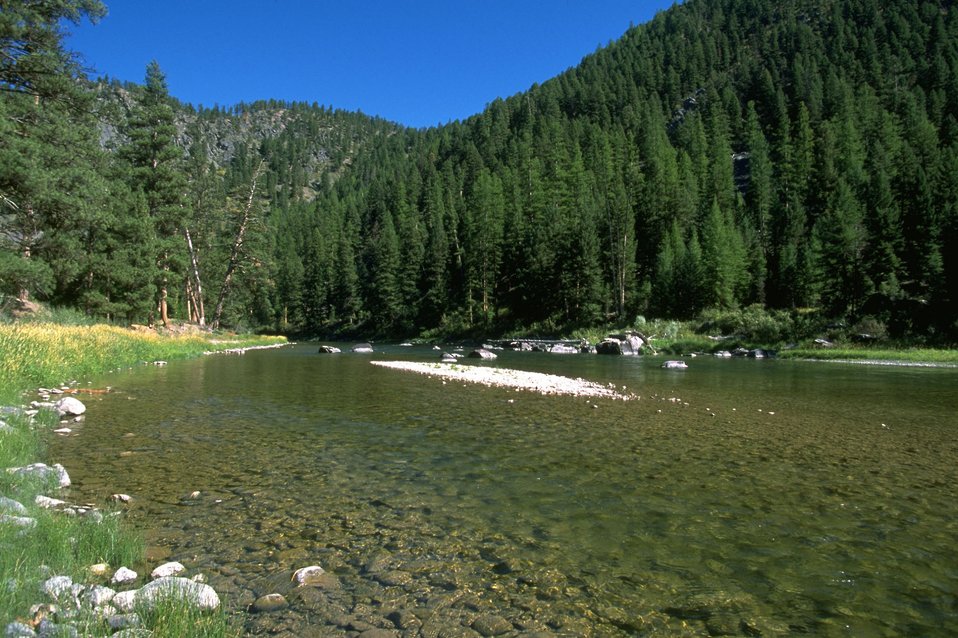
Scenic shot of Blackfoot River